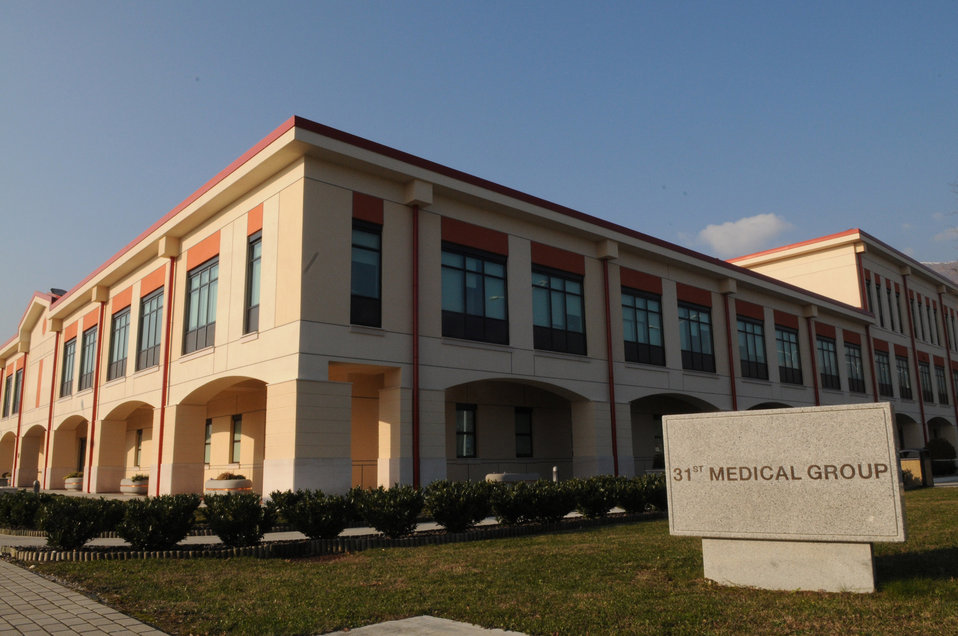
ENERGY STAR distinction

The base hospital at Aviano Air Base, Italy, recently received the Environmental Protection Agency's ENERGY STAR rating. The rating is a national symbol for superior energy and environmental protection. The hospital is the first facility in an overseas location to receive the distinction.